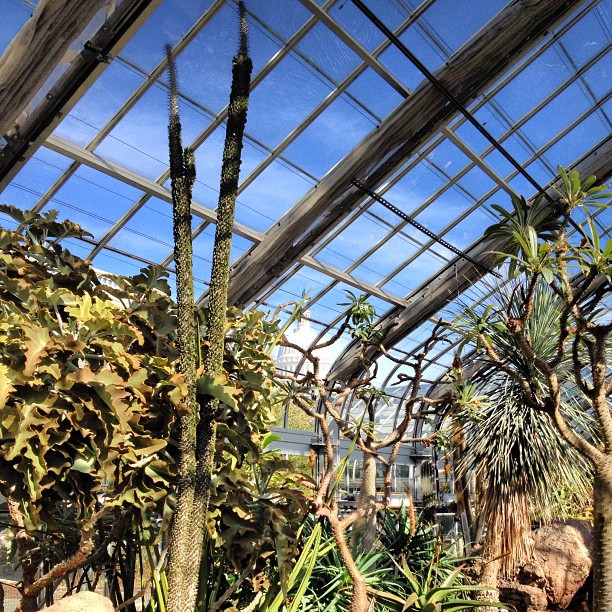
Desert Room of the U.S. Botanic Garden